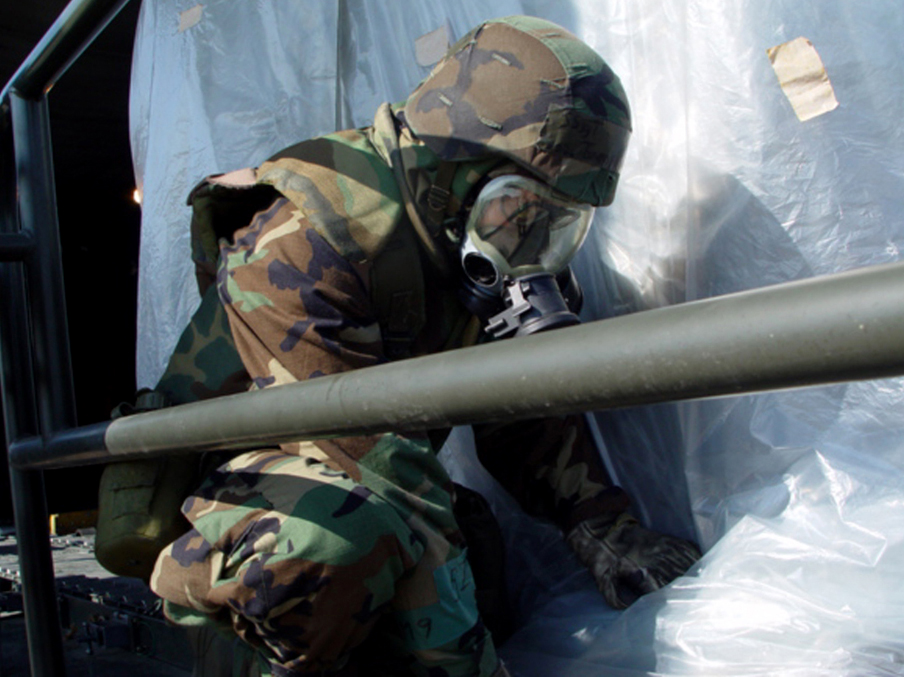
Base tests cargo decontamination

OSAN AIR BASE, South Korea (AFPN) -- Staff Sgt. James Tompkins secures a pallet of possibly contaminated cargo during an Air Mobility Command offload/exchange zone concept operations exercise here. Tompkins is assigned to the base's 731st Air Mobility Squadron.